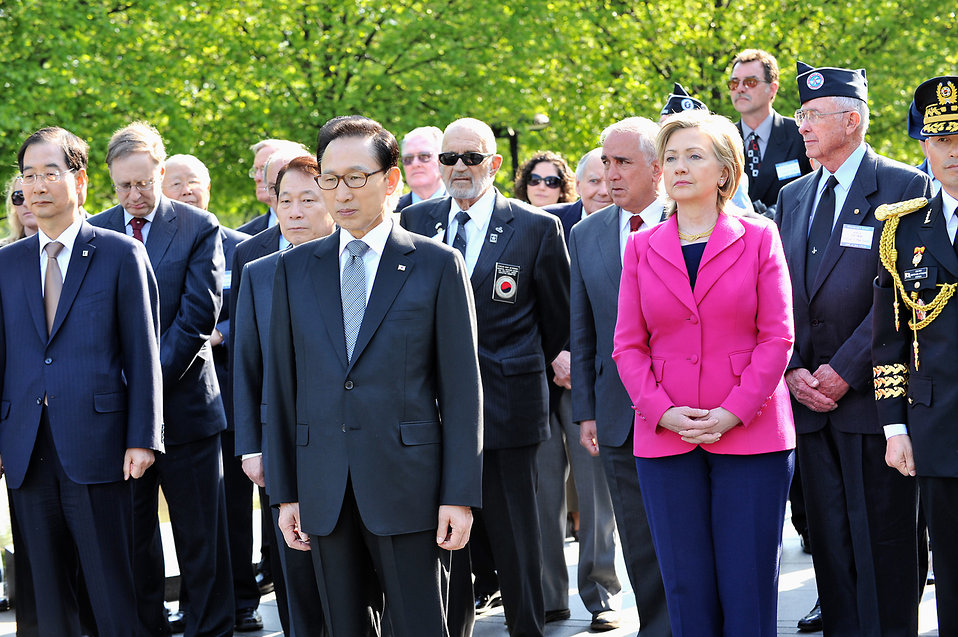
Secretary Clinton Marks 60th Anniversary of the Korean War

U.S. Secretary of State Hillary Rodham Clinton participates in a wreath laying ceremony with Korean President Lee Myung-bak on the 60th Anniversary of the Korean War, at the Korean War Memorial in Washington, DC April 12, 2010.